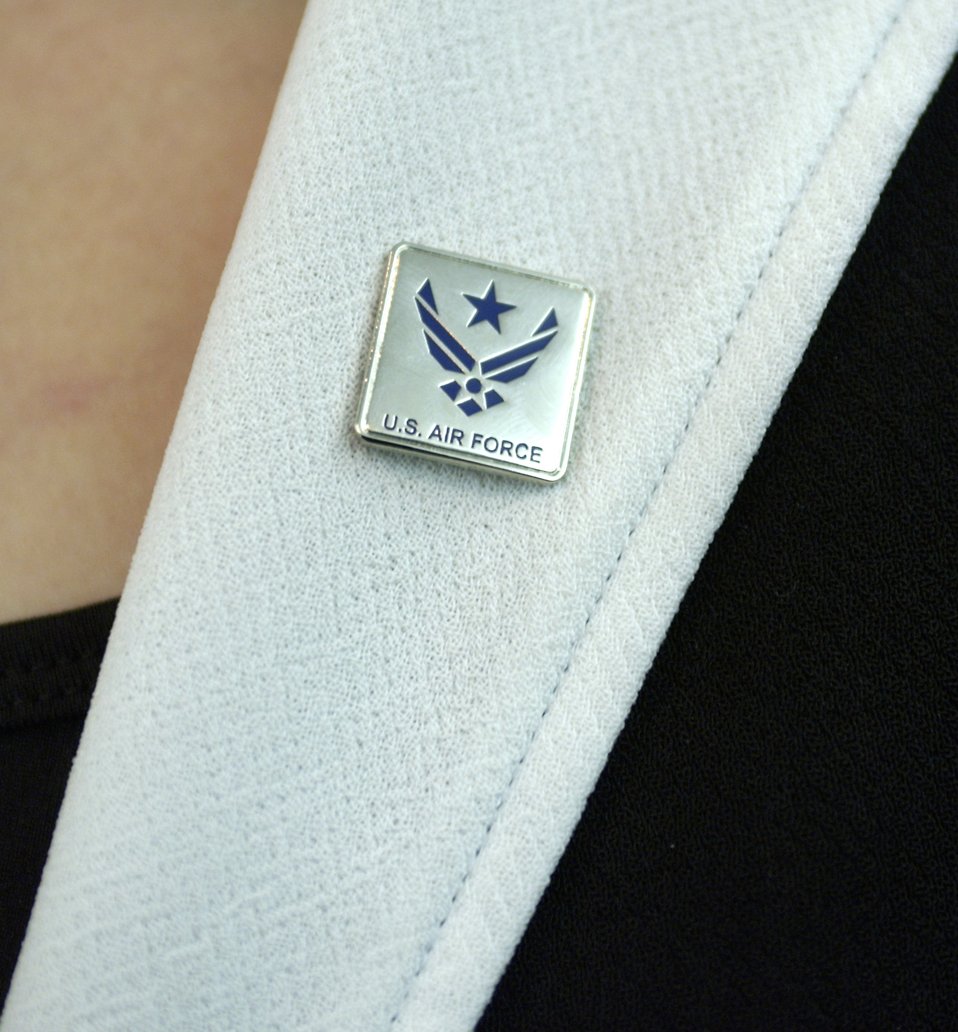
Air Force honors spouses with pin

WASHINGTON -- The Air Force spouse pin sports a blue star cradled in the Air Force symbol. The pin is designed to recognize and thank spouses who support the efforts of Airmen stationed worldwide. It is a contemporary adaptation of a wartime tradition dating back to World War I where families hung service flags in their windows displaying a blue star for each family member serving in the armed forces. Undersecretary of the Air Force Peter B. Teets launched the spouse pin program during a ceremony at the Pentagon on Nov. 8.